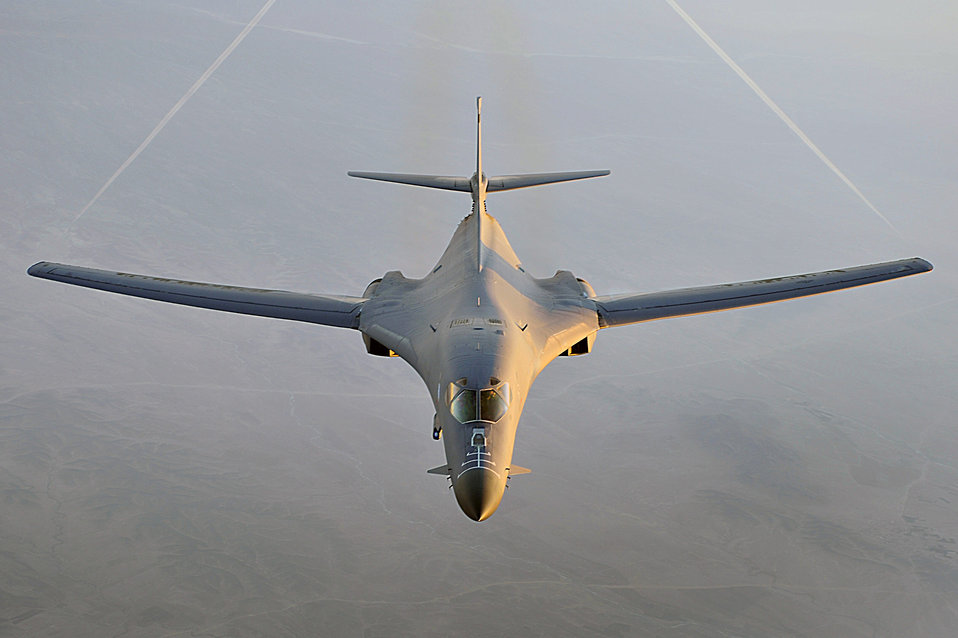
Aug. 27 airpower summary: B-1B destroys enemy position

A B-1B Lancer flies a combat patrol over Afghanistan in support of Operation Enduring Freedom. The B-1B has the capability to carry guided and unguided weapons and deliver massive quantities of precision and non-precision weapons against specific targets.